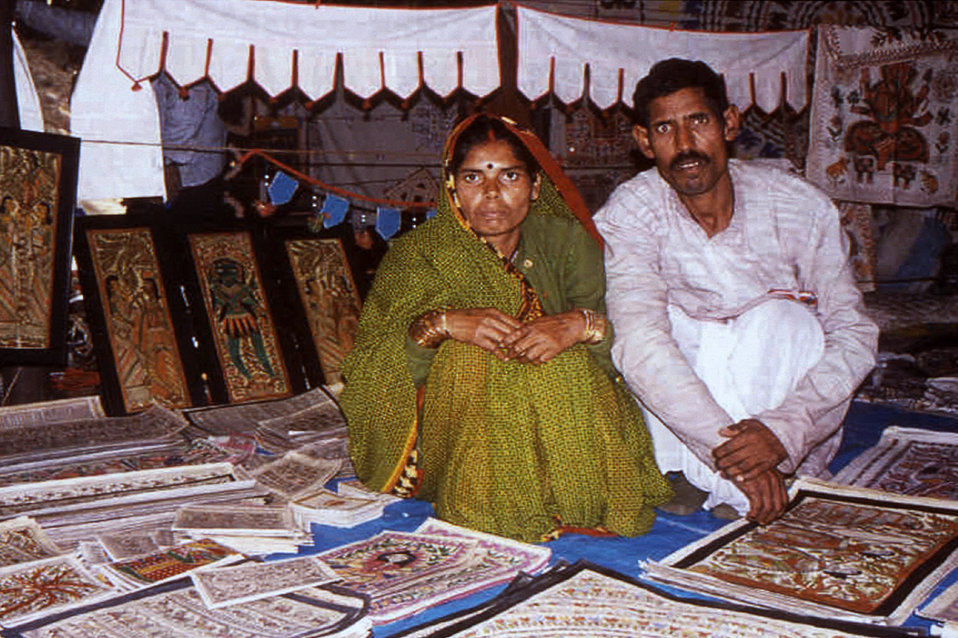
This 2000 photograph was captured during a craft fair in Delhi, India where vendors gathered to sell their wares. These events offered an excellent opportunity for Stop Transmission of Polio (STOP) team members to post informative leaflets describing why, and where the unvaccinated should, and could receive an immunization. This image depicted a couple from the District of Bihar selling their homemade paper goods.